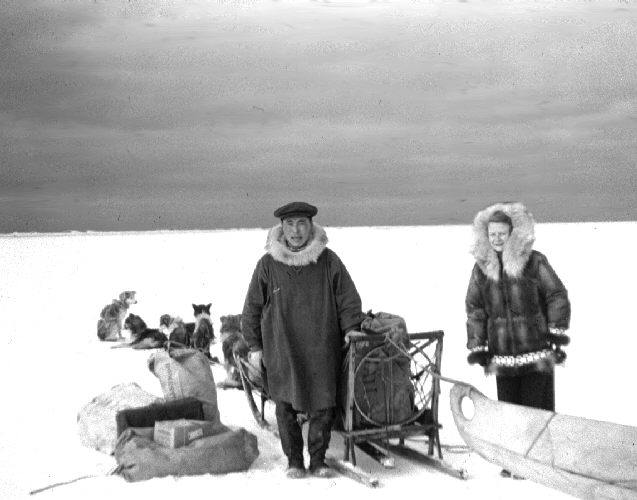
Public Health Nurse in Alaska